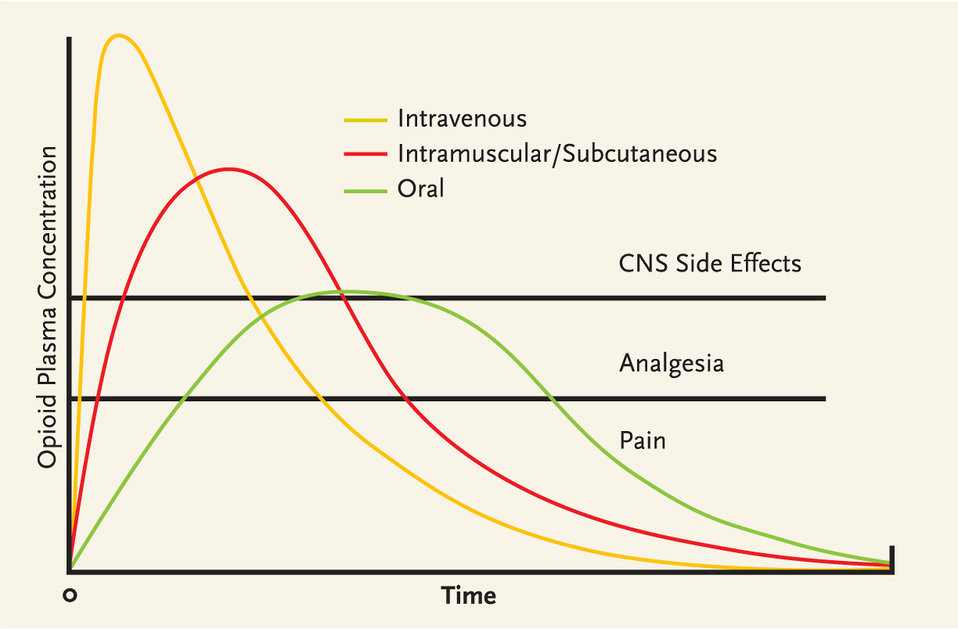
Chart

Routes of opioid administration